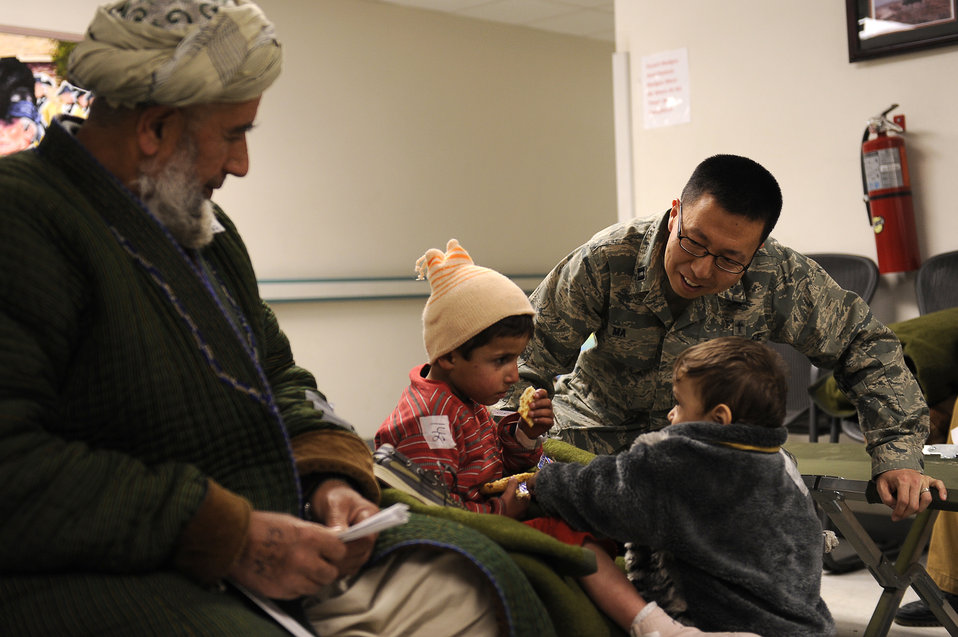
Afghan avalanches

Chaplain (Capt.) Peter Ma talks with avalanche survivors who were medically evacuated to Craig Joint Theater Hospital Feb. 9, 2010, at Bagram Airfield, Afghanistan. Dozens of Afghans were taken to Bagram Airfield after avalanches struck a mountain pass in the Parwan Province.